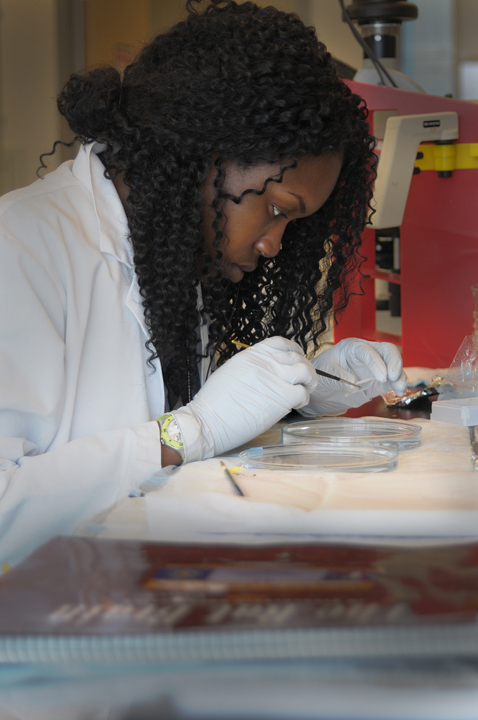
IRP Researcher

'Michelle Ayorinde, pre-IRTA, preparing brain samples for morphological analysis.'